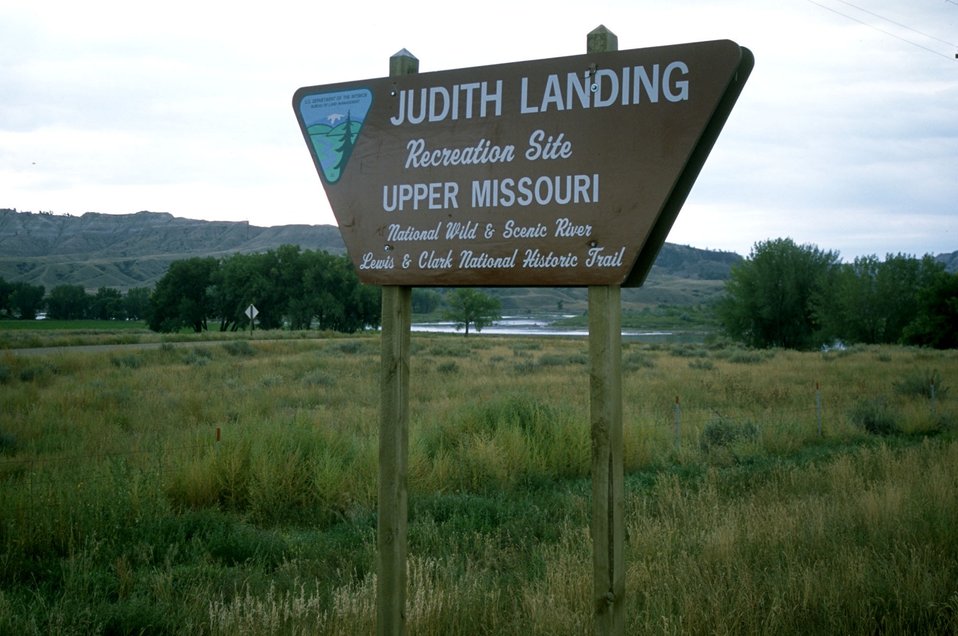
Judith Landing recreation site sign